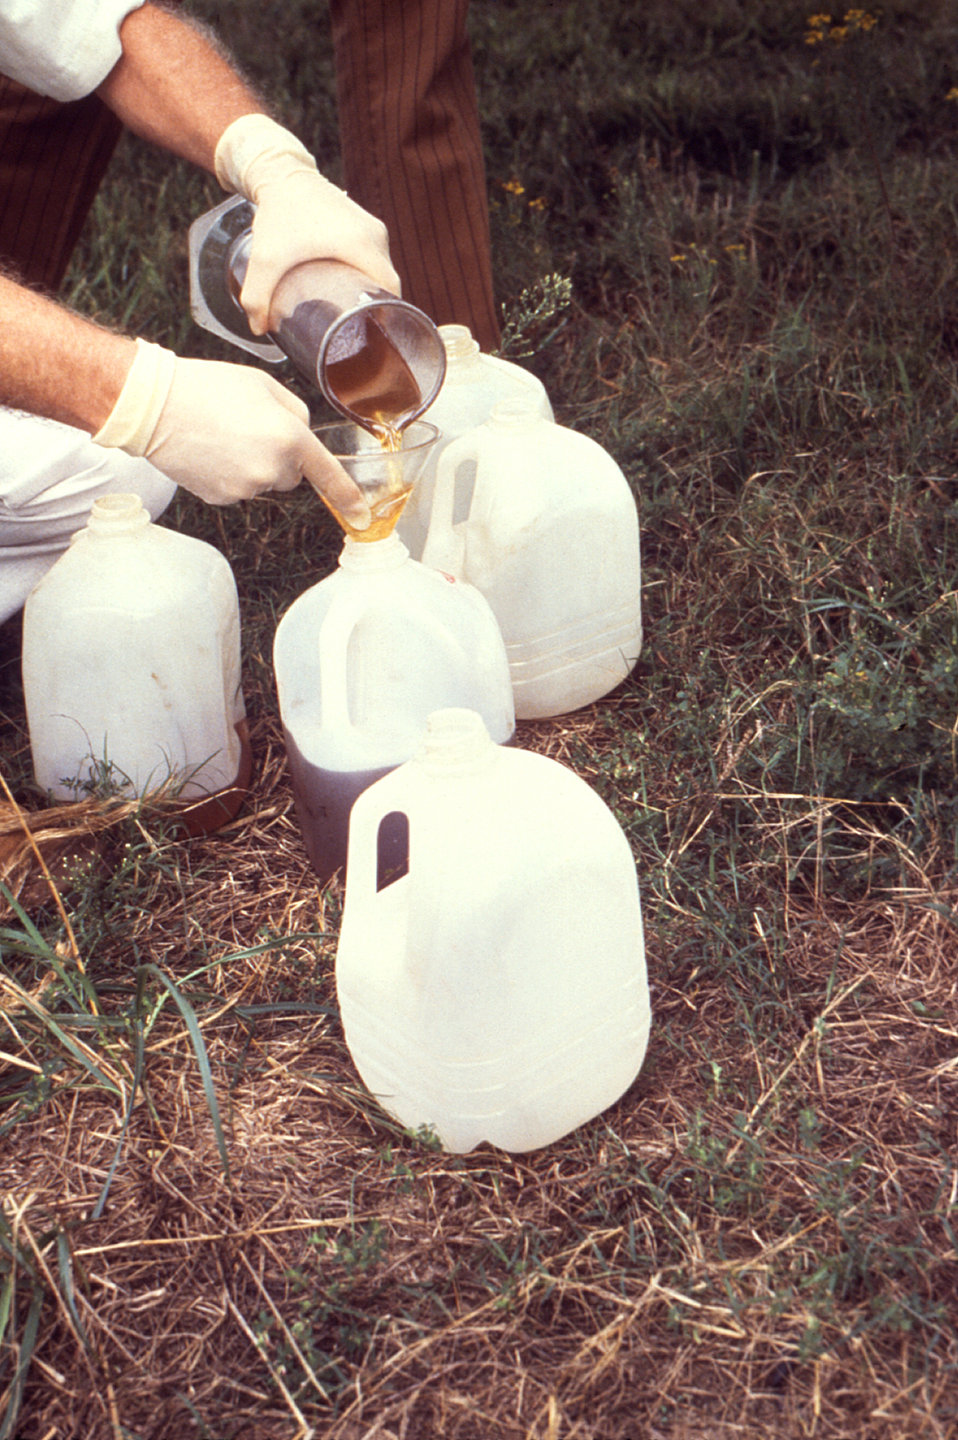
This 1981 photograph depicts a vector-control field technician as he pours excess insecticide captured during the calibration process of an aircraft on-board insecticide mechanism spray nozzle.